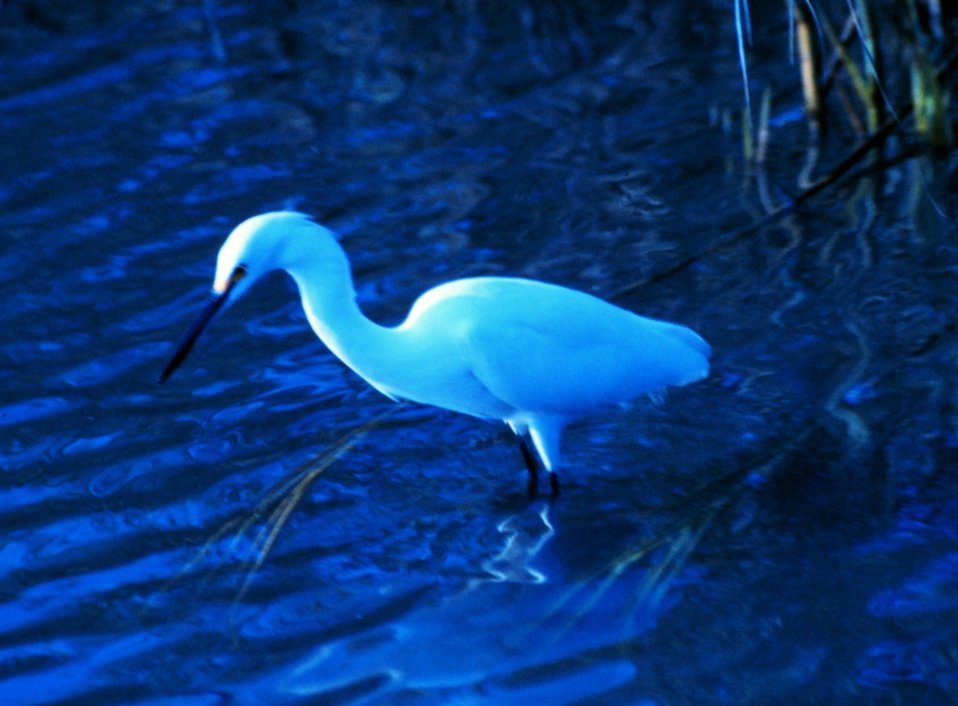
A great white egret in the tidal waters of Charleston harbor.